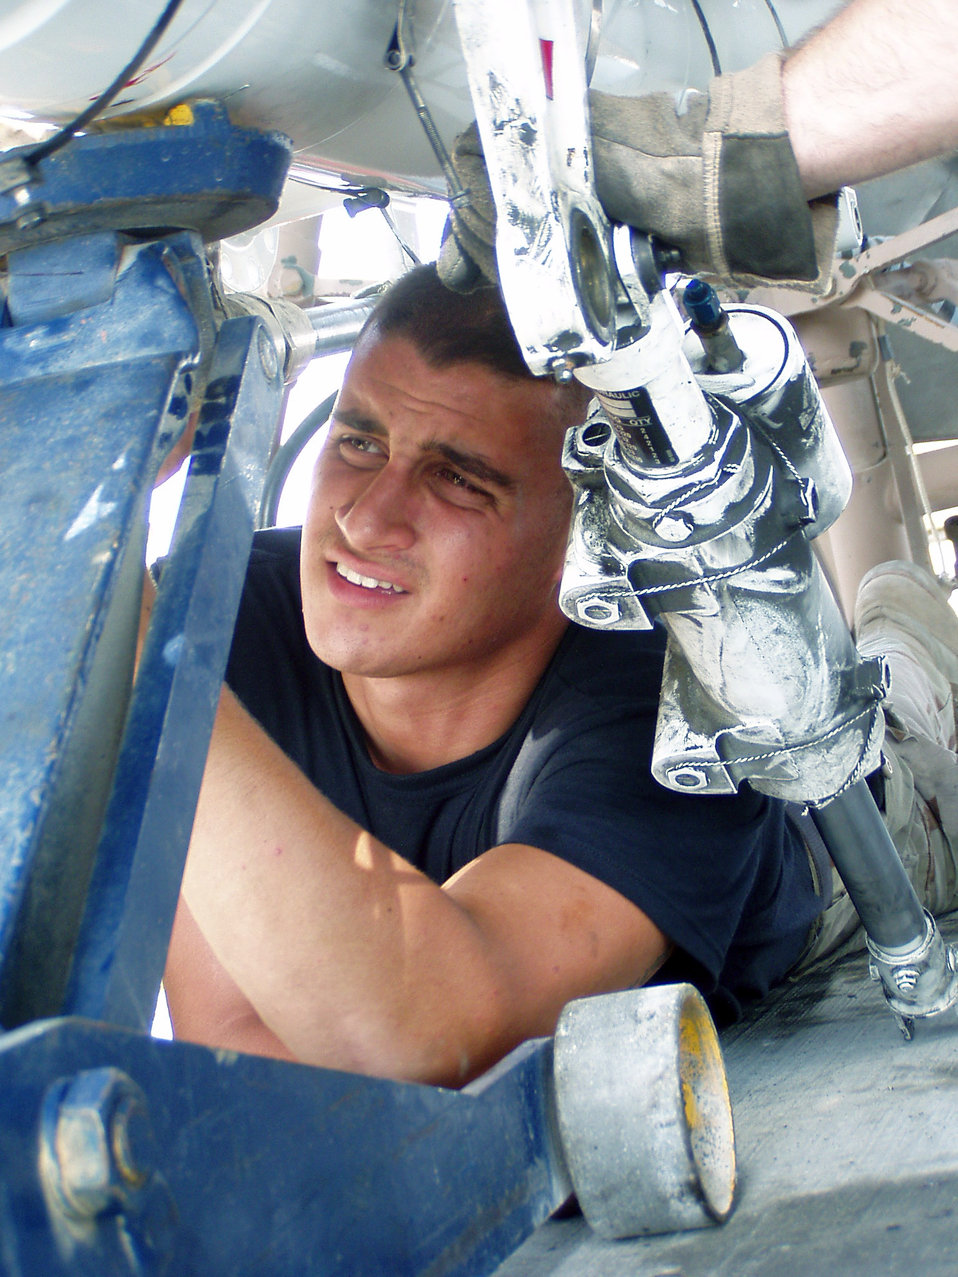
Fix 'er up

SOUTHWEST ASIA -- Airman 1st Class Brett Baragia replaces a wheel truck aboard a KC-135 Stratotanker at a forward-deployed location. Airman Baragia is deployed from Fairchild Air Force Base, Wash.